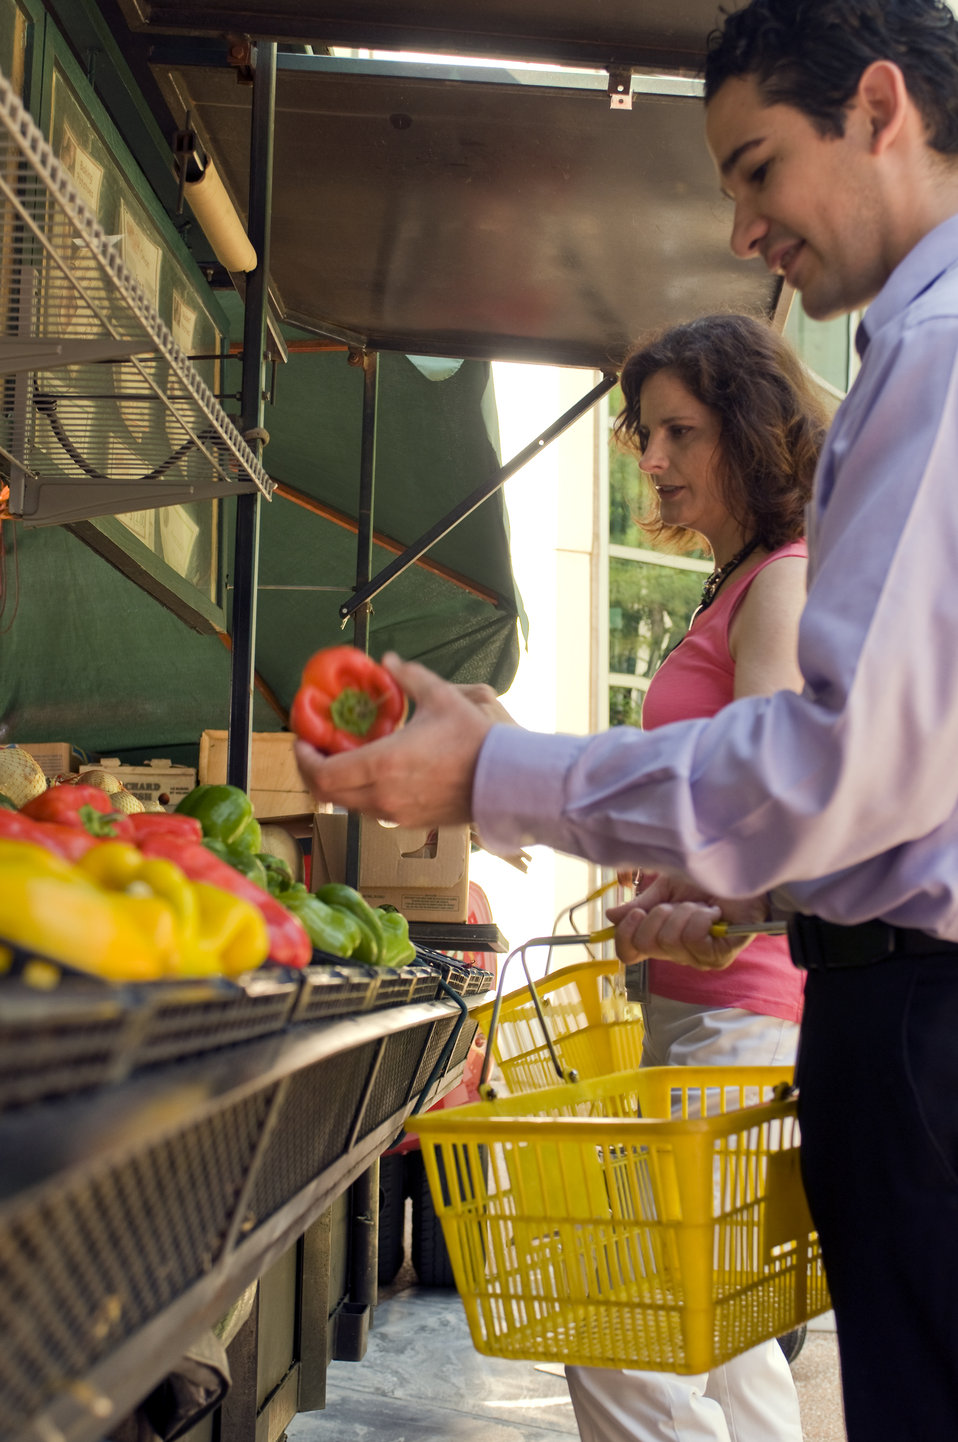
The man and woman pictured here were in the process of choosing an array of healthy fruits and vegetables at a mobile produce market, and placing their choices into yellow, hand-held plastic baskets. Here, the man in the foreground, was inspecting a bright red bell pepper, which is a food that has been shown to be high in its vitamin A and vitamin C content.